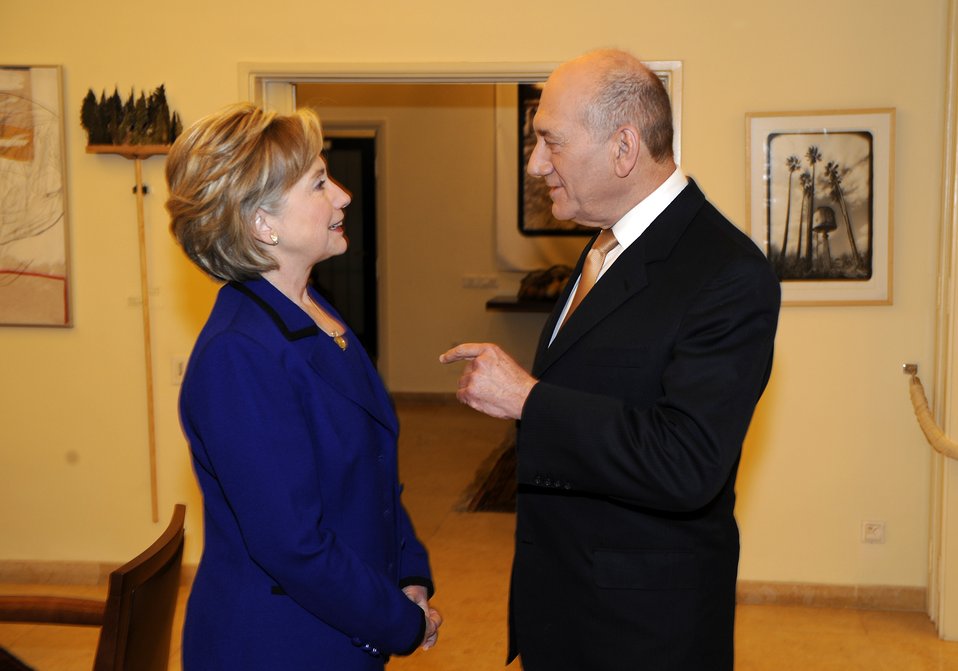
Secretary Clinton Visits Israeli Prime Minister Residence

U.S. Secretary of State Hillary Rodham Clinton during visit to Prime Minister Ehud Olmert's Residence, Jerusalem, March 3, 2009.